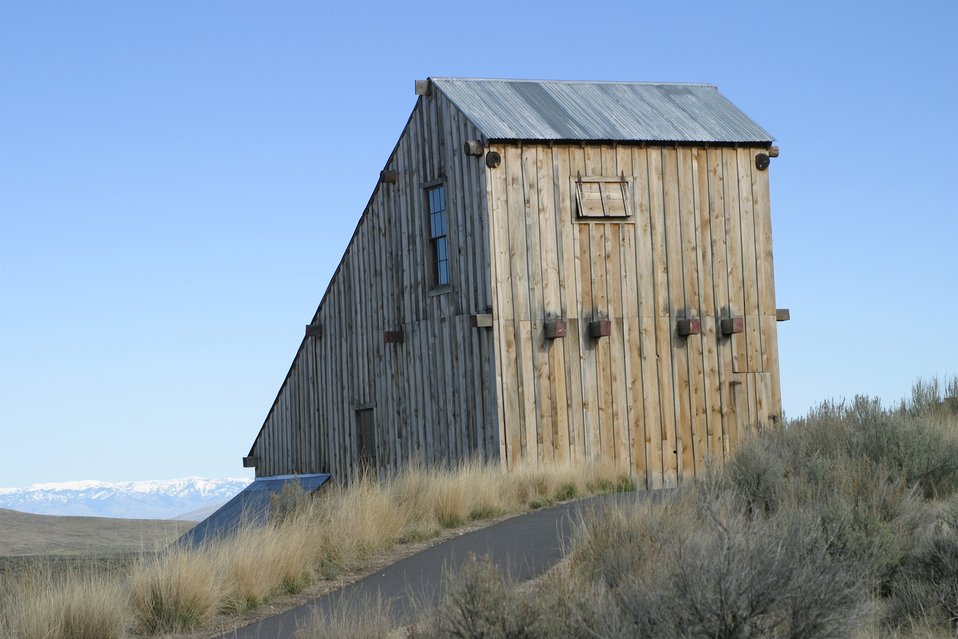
A replica of the Rabbit Mine 1926 stamp mill near Greenhorn in the Blue Mountains of eastern Oregon. It is used to interpret the importance of mining in western history, and the relationship of gold mining to the westward migration story.